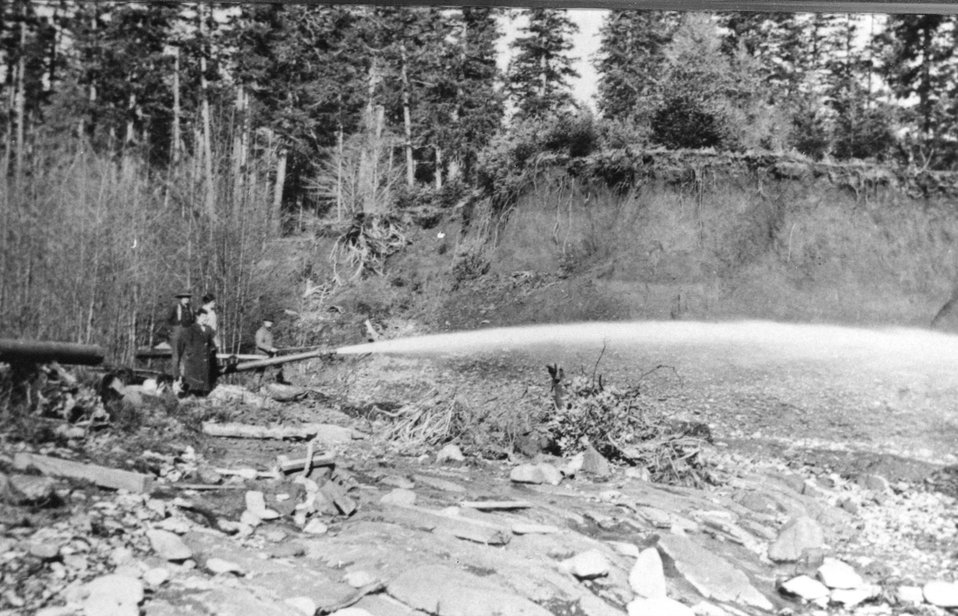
Placer Gold Mining at Mule Creek.